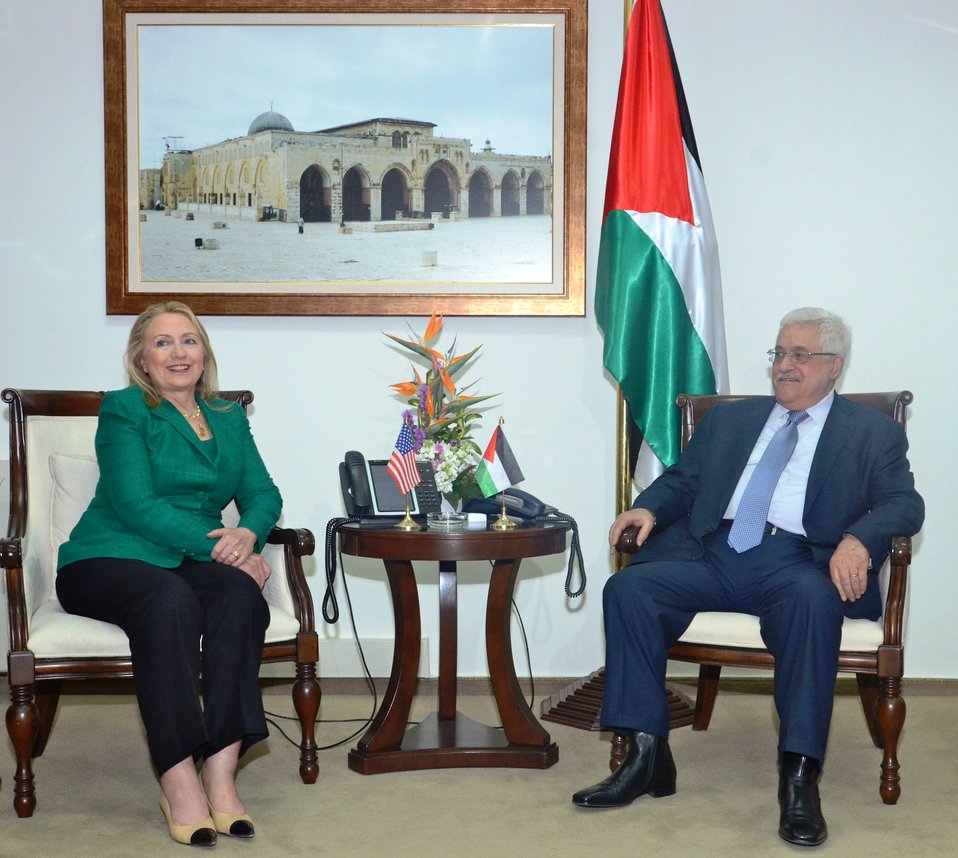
Secretary Clinton Meets With Palestinian Authority President Abbas

U.S. Secretary of State meets with Palestinian Authority President Mahmoud Abbas in Ramallah, November 21, 2012.